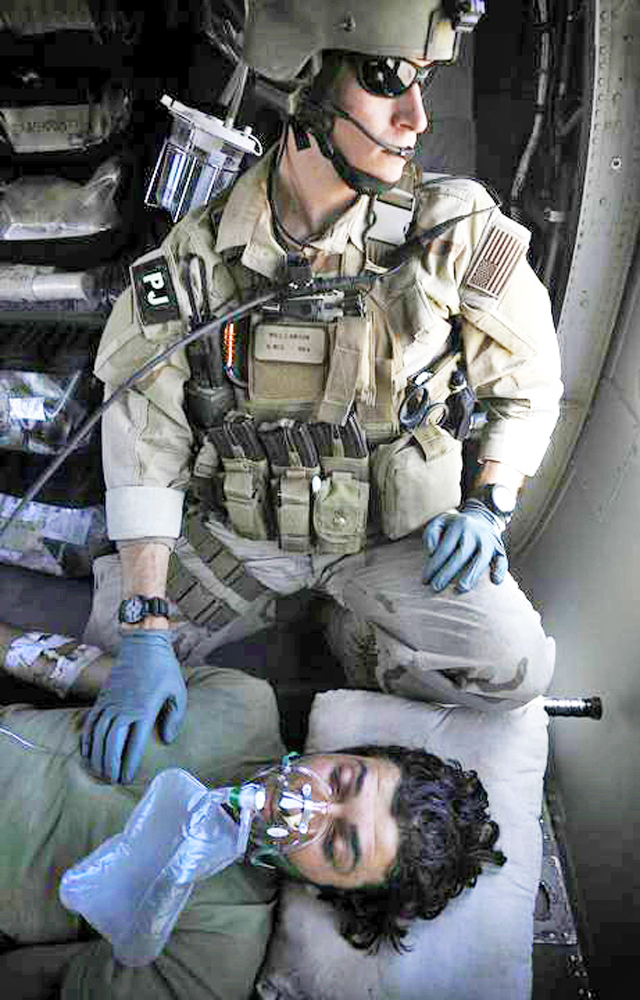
Deliver with care

Staff Sgt. William Lawson, a pararescuemen with the 129th Expeditionary Rescue Squadron, keeps an eye on the countryside as he cares for a wounded Afghan National Army soldier from the Hemland Province, Afghanistan. Sergeant Lawson will provide care to the injured soldier until he is safely delivered to a hospital.